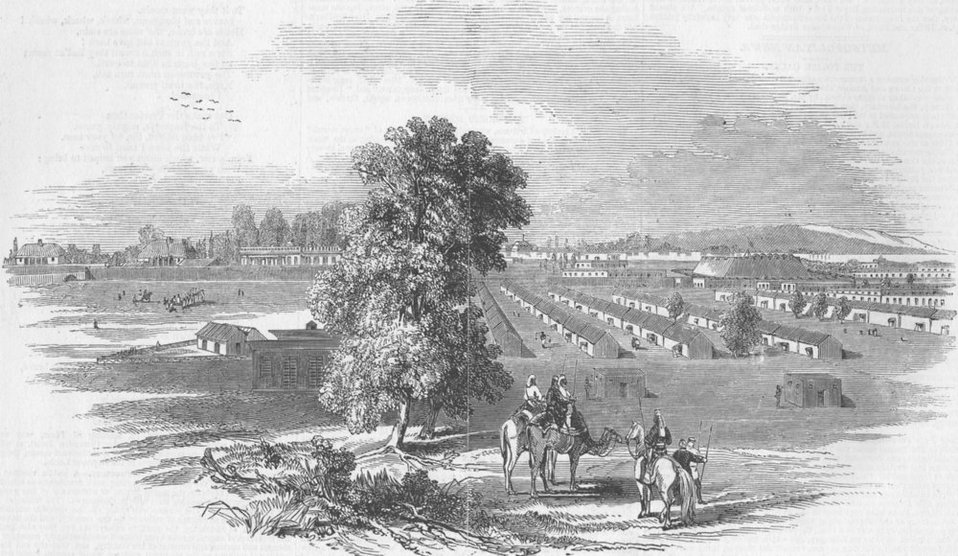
'Loodianah, on the Sutlej'*